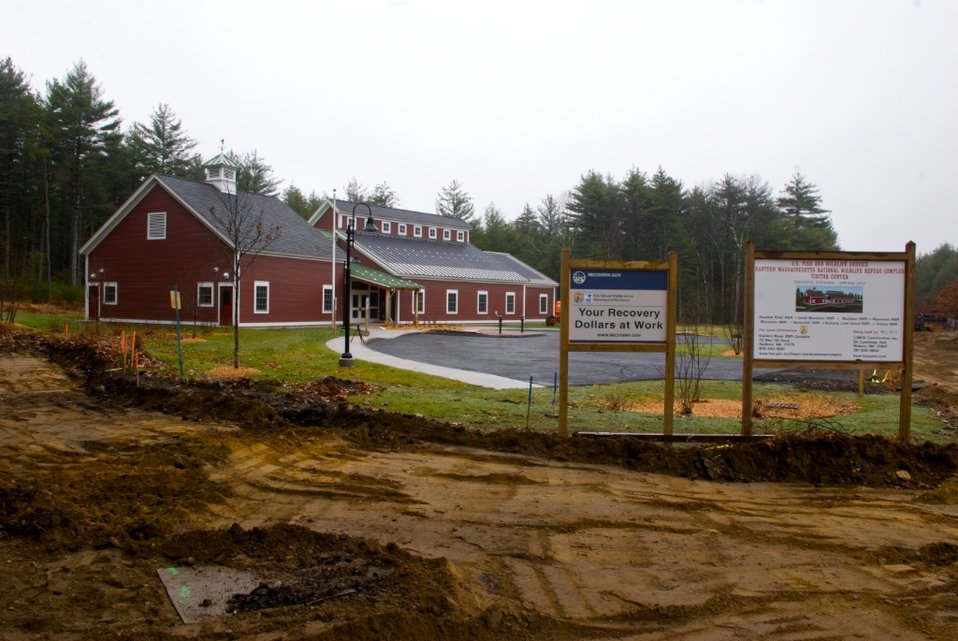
Assabet River NWR Visitor Center

In 2010, the U.S. Fish and Wildlife Service will open the doors to a new energy efficient administrative and visitor center for the Eastern Massachusetts National Wildlife Refuge Complex at the Assabet River refuge in Sudbury, Mass.

American Recovery and Reinvestment Act funding will support the fabrication and installation of exhibits that will enhance visitors' experience with information about the refuge's wildlife, habitats, and recreational opportunities.